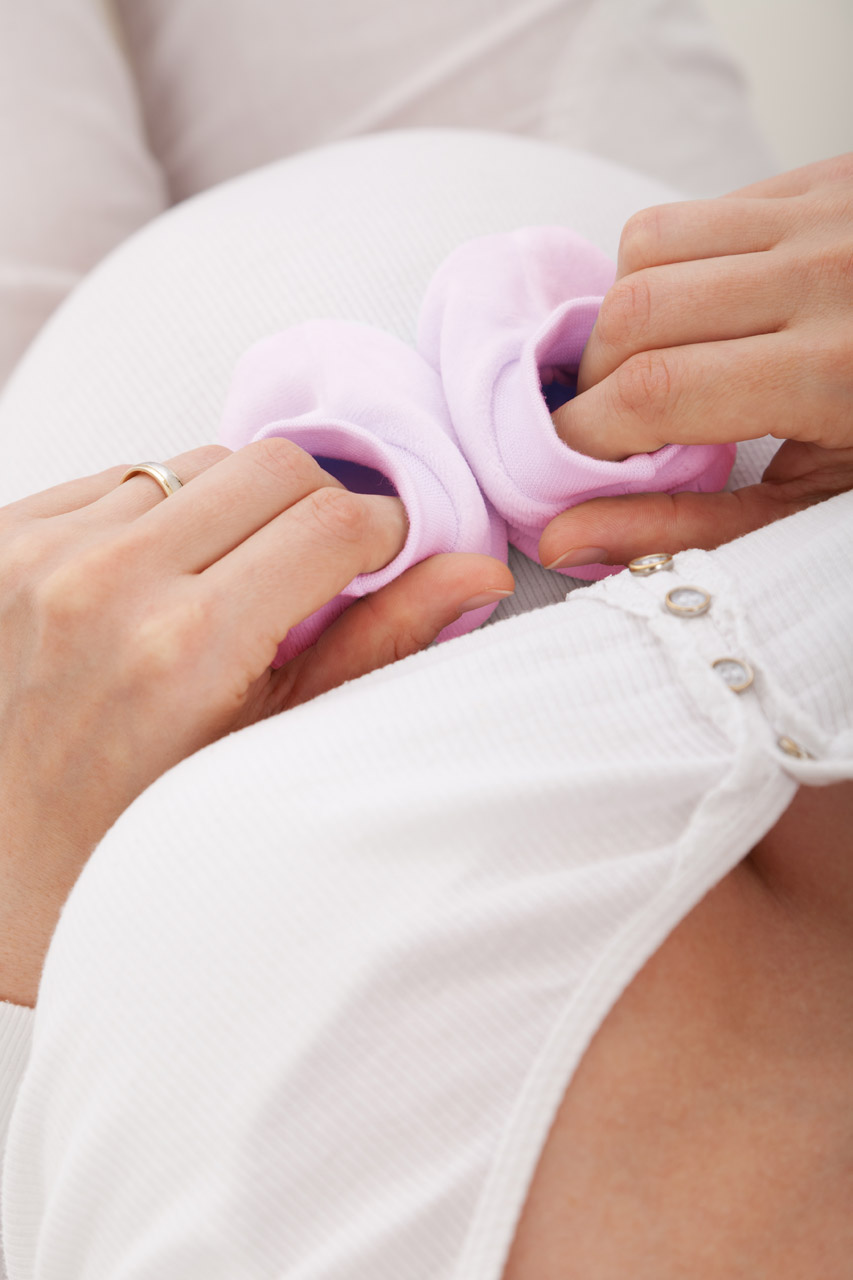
Expecting baby girl

Mom to be holding pink shoes on her belly.